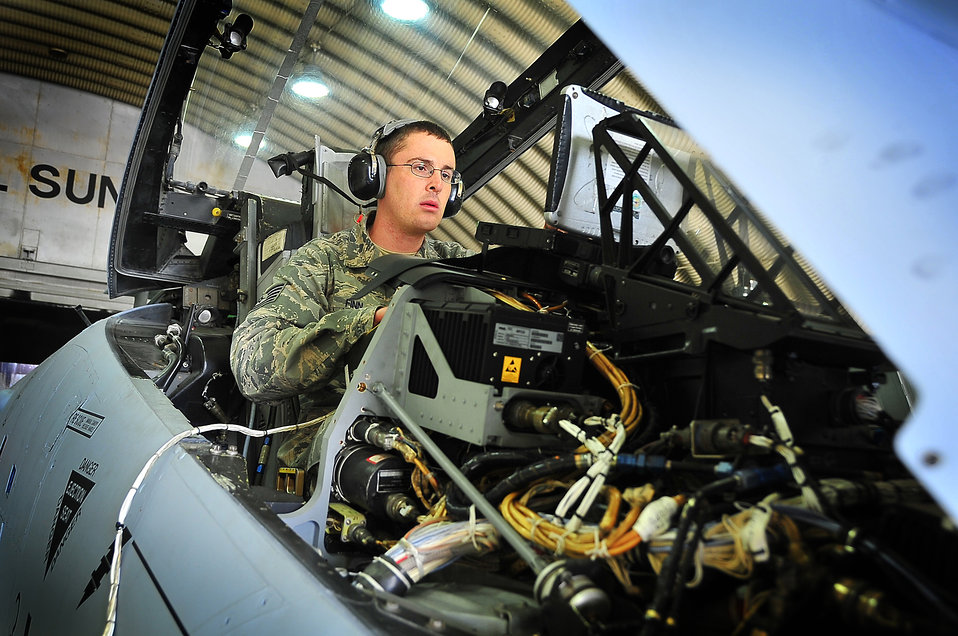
Checking it out

An electro-environmental technician performs an operations check on an A-10 Thunderbolt II April 4, 2011, as part of an operational readiness exercise at Osan Air Base, South Korea.